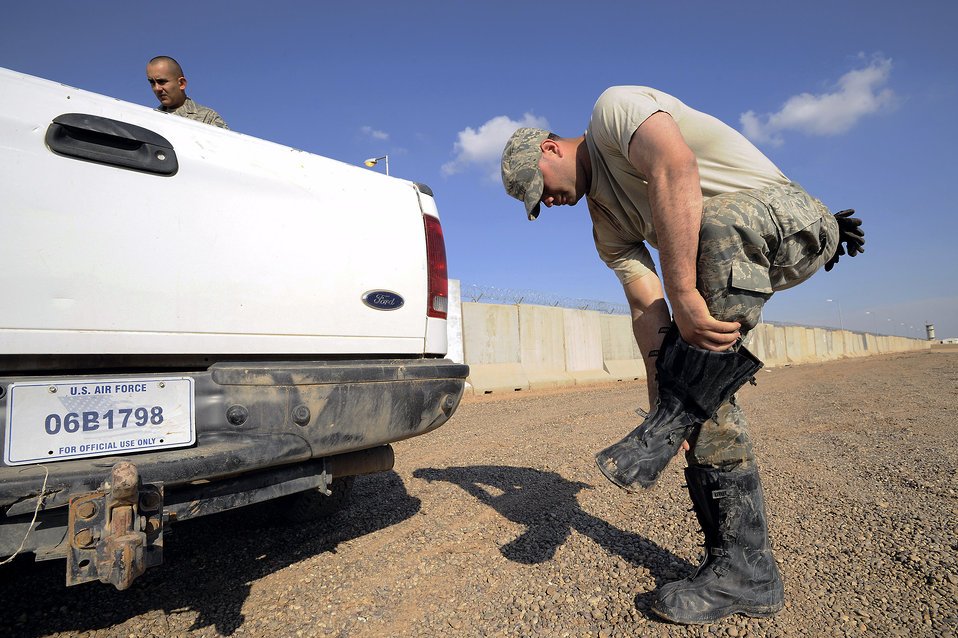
Did someone call a plumber?

Senior Airman Paul Clayborn removes rubber boots after pumping floodwater into an unused yard Nov. 3 at Joint Base Balad, Iraq. Airman Clayborn, a utility system journeyman with the 332nd Expeditionary Civil Engineer Squadron, is deployed from Andrews Air Force Base, Md. His hometown is Arlington, Texas.